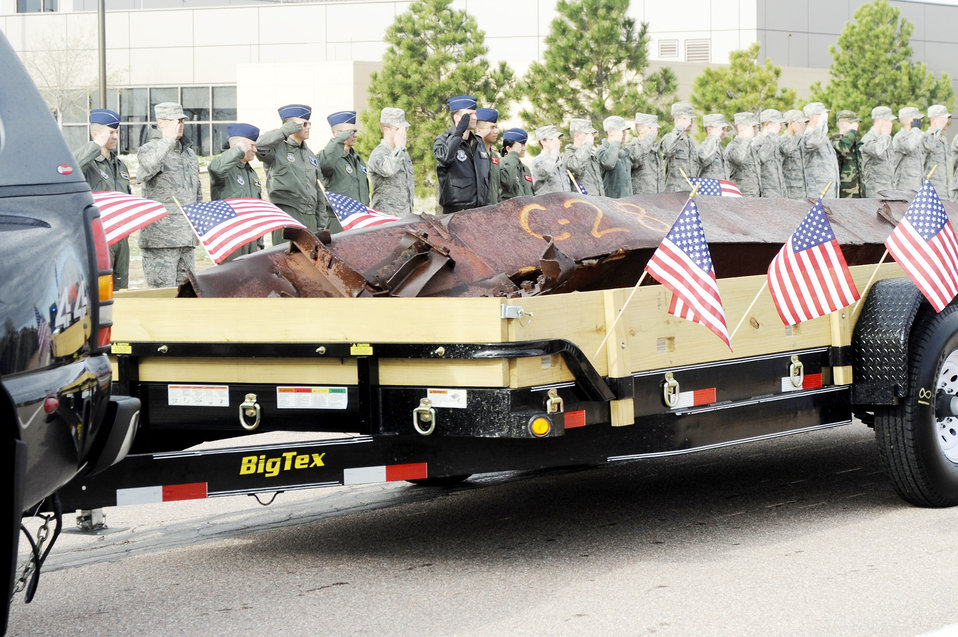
Future memorial for Schriever

Airmen salute during the arrival of a beam from one of the collapsed towers of the World Trade Center April 26, 2010, at Schriever Air Force Base, Colo. The beam was donated to become part of a memorial on base to commemorate the events of Sept. 11, 2001.